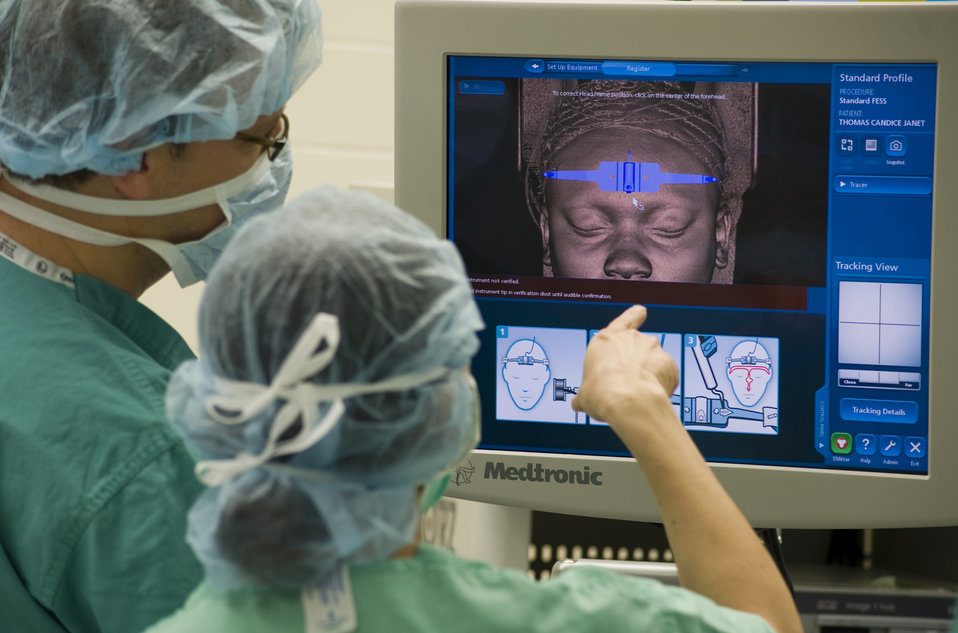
Ambulatory Surgery Clinic

Dr. Carrie Flanagan, right, 779th Surgical Operations Squadron staff otolaryngologist, and Erik Engelke, Medtronic representative, look at a CT scan image of ENT patient, Airman 1st Class Candice Thomas on a new MEDTRONIC computerized CT imaged guided surgery system May 11, 2012.